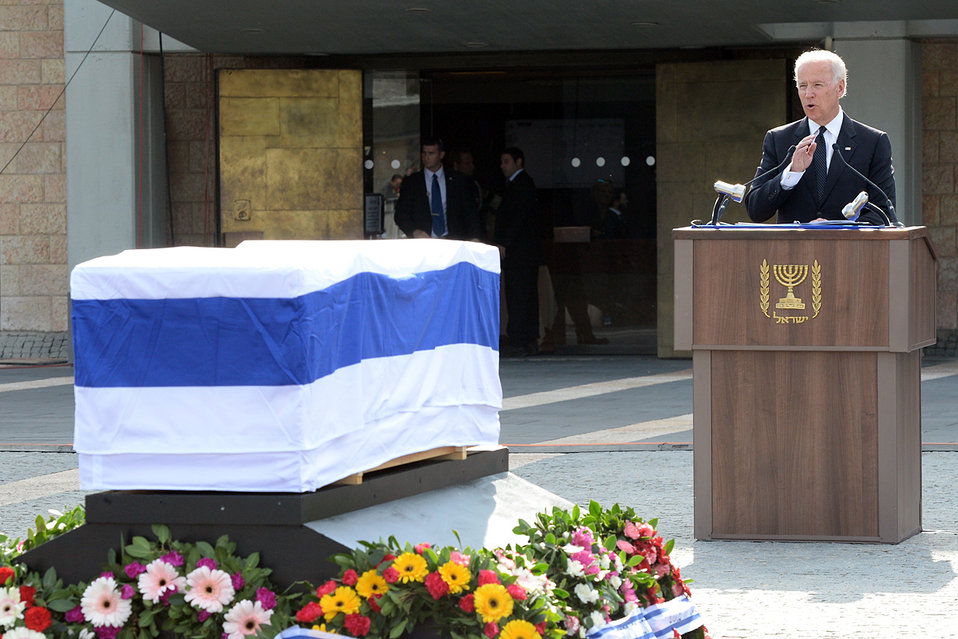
Vice President Biden Delivers Remarks at the State Funeral of Former Israeli Prime Minister Sharon

Vice President Joe Biden delivers remarks at the State Funeral of Former Israeli Prime Minister Ariel Sharon in Jerusalem on January 13, 2013.